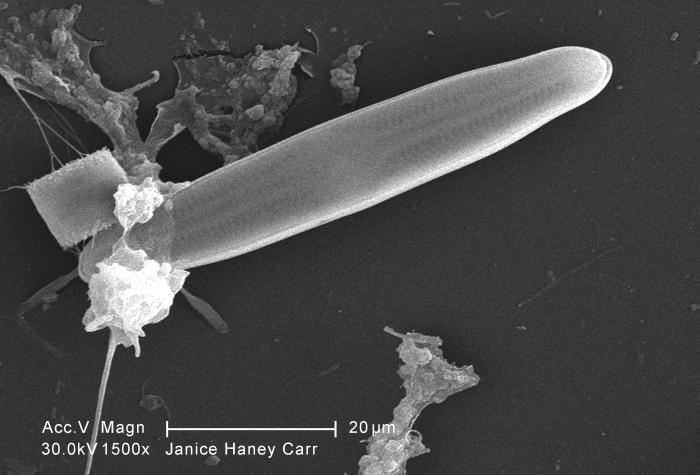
This scanning electron micrograph (SEM) of an untreated water specimen extracted from a wild stream mainly used to control flooding during inclement weather, revealed the presence of unidentified organisms, which included bacteria, protozoa, and algae. Here we see what appeared to be examples of diatomic, bacterial, and protozoan species, which were but a few of the inhabitants of this fresh water stream. Note also the amorphic gelatinous biofilm within which were embedded bacteria, and amoebic microorganisms. For a colorized view of this image, see PHIL 11710.